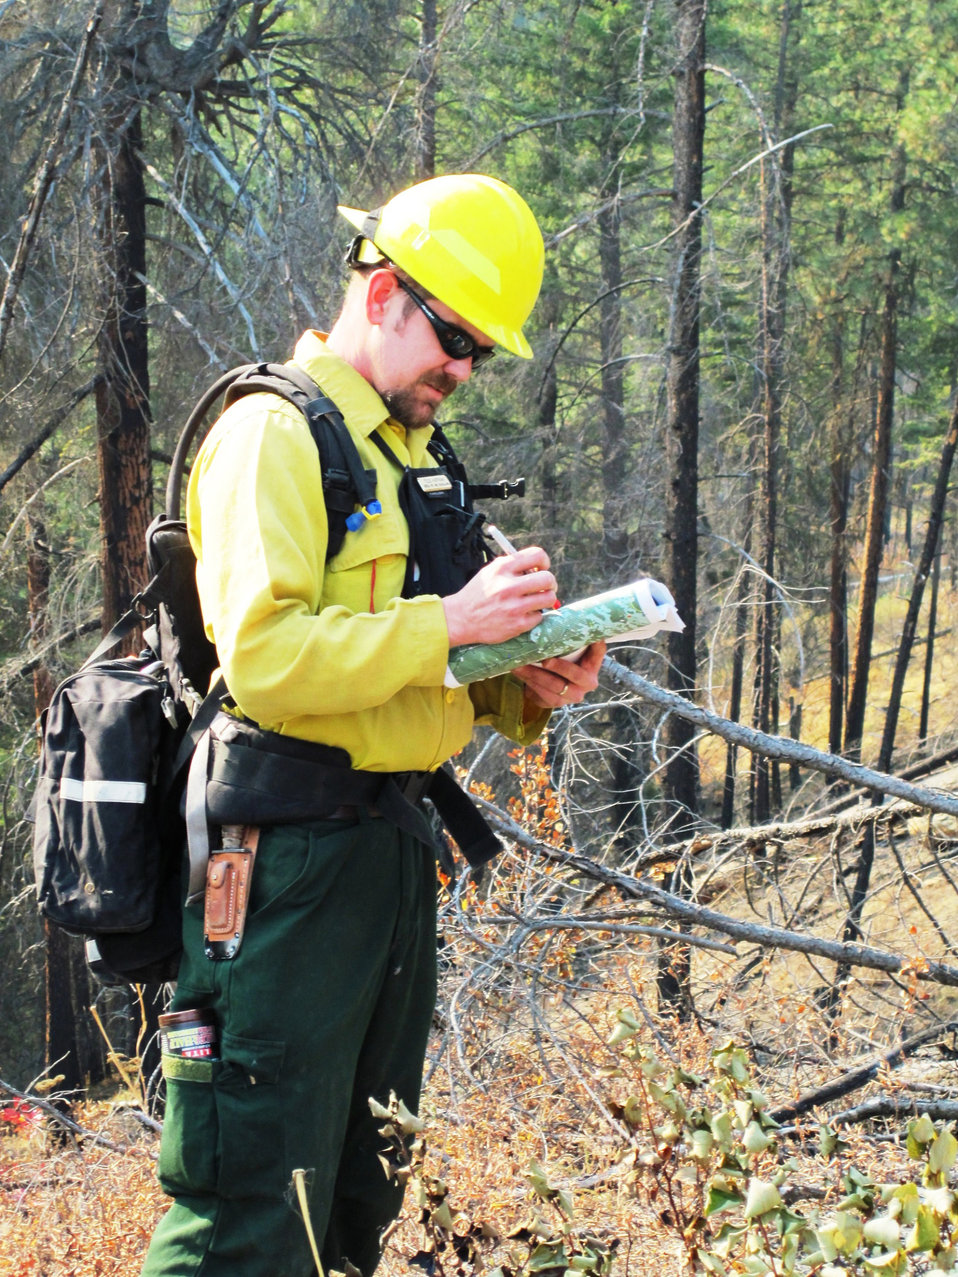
Burned Area Emergency Response (BAER) scientist surveys burned area at the site of the Central Washington Fire in the Wenatchee National Forest in Washington. BAER is a rapid assessment of burned watersheds by a BAER team to identify imminent post-wildfire threats to human life and safety property and critical natural or cultural resources on National Forest System lands and take immediate actions to implement emergency stabilization measures before the first major storms. Fires result in loss of vegetation exposure of soil to erosion and increased water runoff that may lead to flooding increased sediment debris flows and damage to critical natural and cultural resources. BAER team members implement seeding and mulching installation to prevent erosion, erect temporary water run-off control structures that will protect recovering areas, and installation of warning signs, replace safety related facilities, remove safety hazards, prevent permanent loss of habitat for threatened and endangered species, and prevent the spread of noxious weeds and protect critical cultural resources.